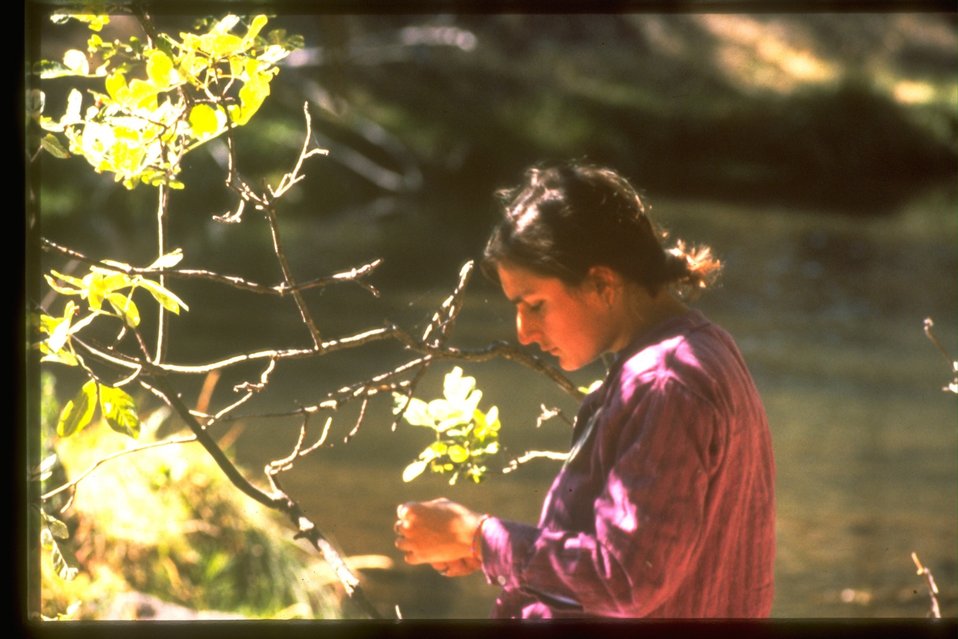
Seed gathering at Jenny Creek on volunteer day.